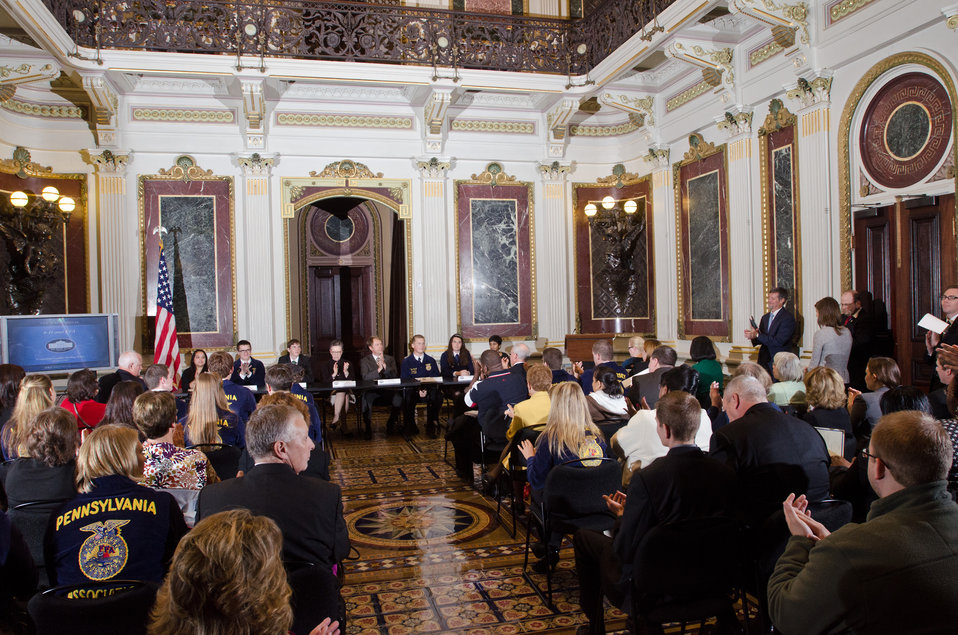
The Youth Champions of Change Panel of FFA and F-H members completes their presentations to a round of applause at the Champions of Change Recognition event in the Indian Treaty Room at the Executive Office Building in Washington, D.C. on Tuesday, Oct. 9, 2012. The Champions of Change program was created to honor ordinary Americans doing great work in their communities. Each week, a different sector is highlighted and groups of Champions, ranging from educators, entrepreneurs and community leaders, are recognized for the work they are doing to serve and strengthen their communities. The Indian Treaty Room, originally the Navy's library and reception room, has rich marble wall panels, tiled floors, 800-pound bronze sconces, and gold leaf ornamentation.